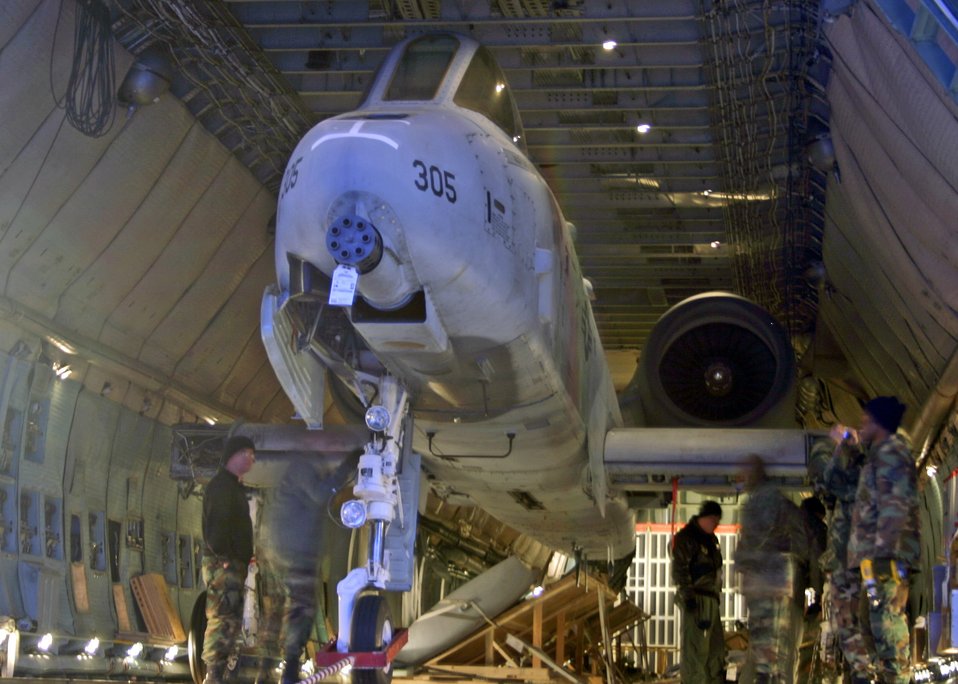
Eielson's last A-10 nestles into new home

An A-10 Thunderbolt II gets buckled-in for a flight on a C-5 Galaxy to its new home at the Robbins Air Force Base, Ga., Museum of Aviation Flight and Technology Center Oct. 6 at Eielson Air Force Base, Alaska. A team of eight members disassembled the aircraft into six sections; wings, vertical stabilizers, horizontal stabilizer and the body of the craft.